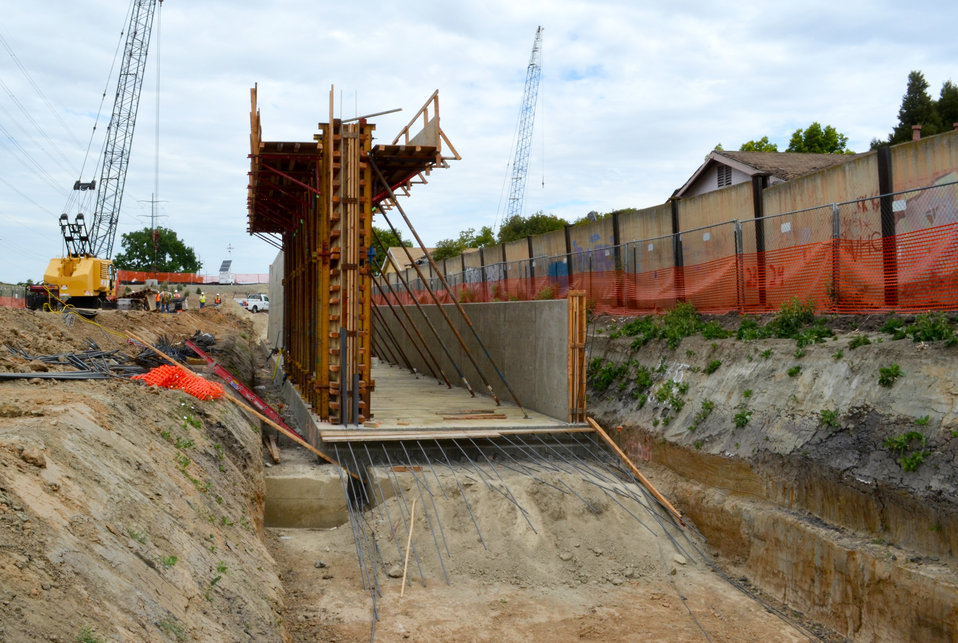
Morrison Creek flood wall July 19, 2012

Contractors for the U.S. Army Corps of Engineers Sacramento District continue construction July 19, 2012, on a new concrete flood wall along Morrison Creek in south Sacramento, Calif. The 3,300-foot-long flood wall will extend an existing flood wall, further reducing flood risk in the area, and eventually house a potable water line for Sacramento. The work is a joint effort between the Corps, the Central Valley Flood Protection Board and the Sacramento Area Flood Control Agency. Completion is scheduled for 2013.